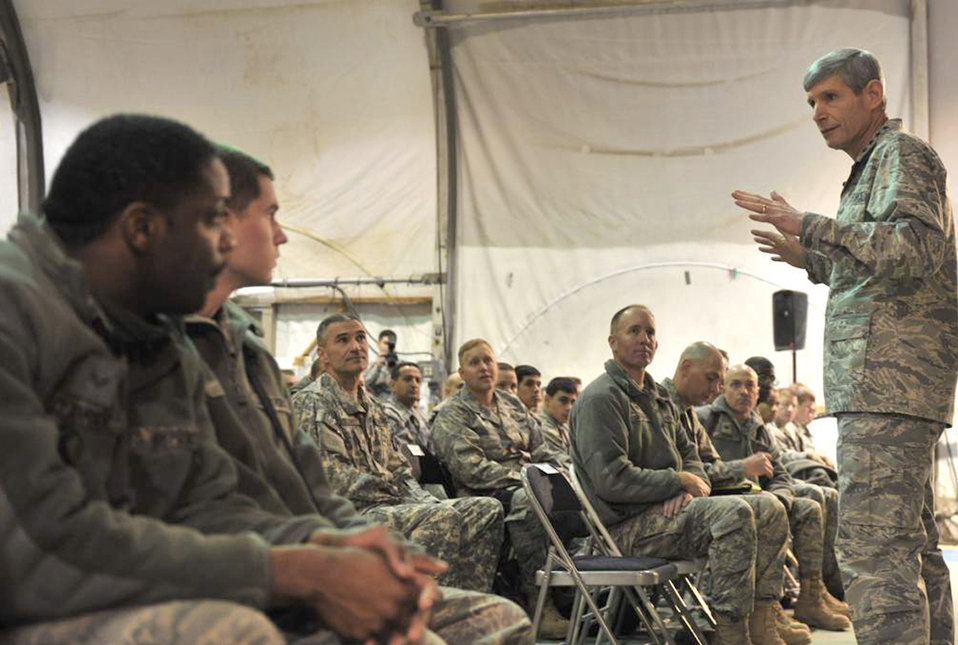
CSAF meets with Airmen

Air Force Chief of Staff Gen. Norton Schwartz speaks to Airmen during an